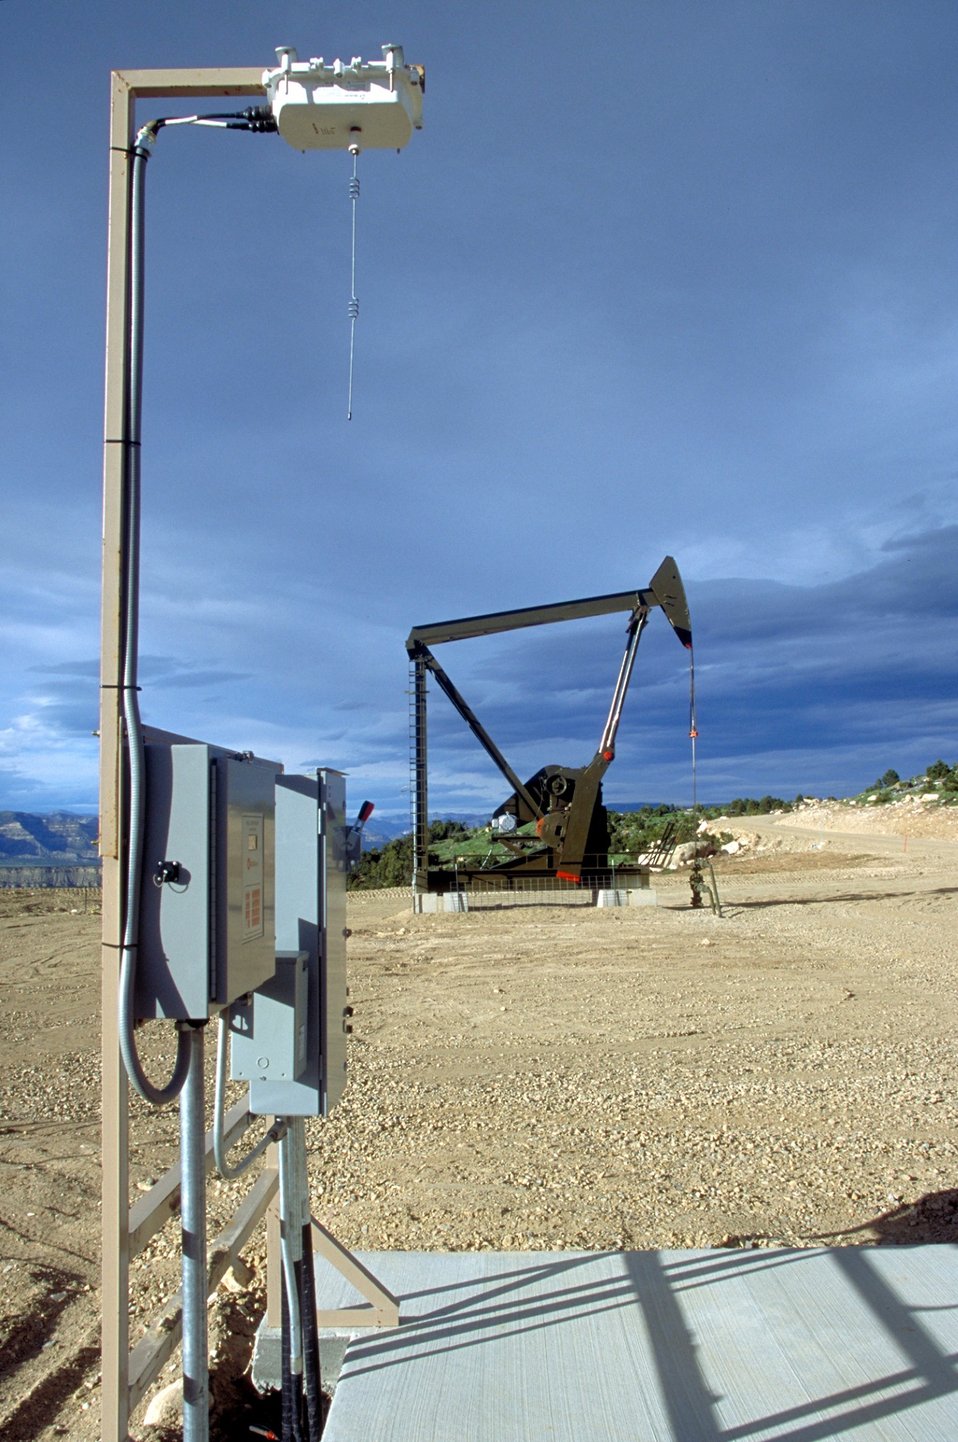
Pump unit producing coal bed methane near Price, Utah.